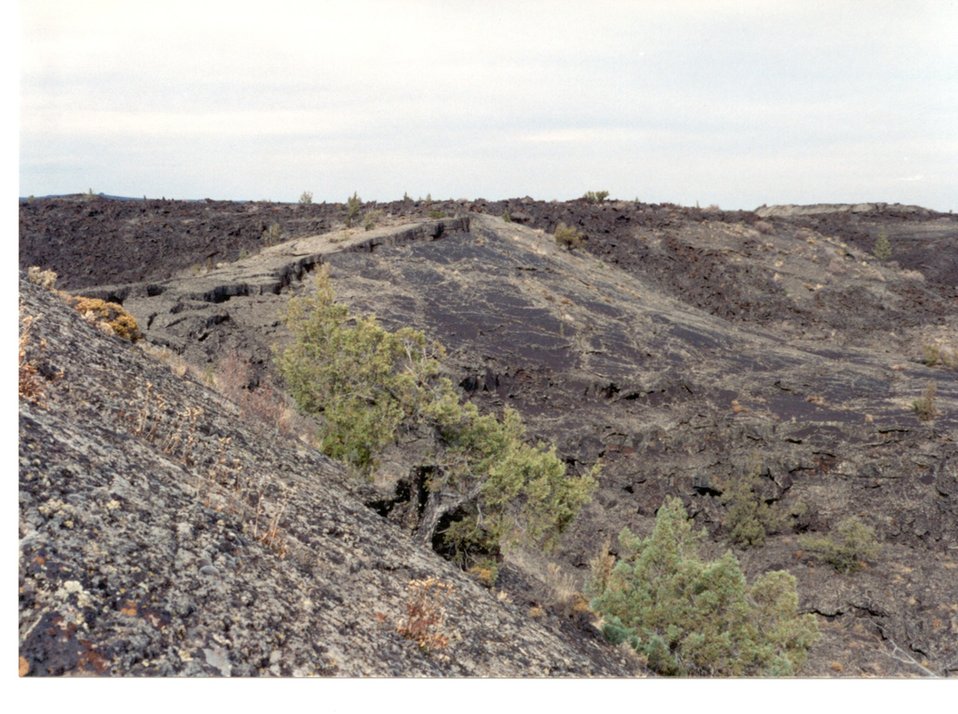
Pressure Ridge ad Wapi Flows Craters of the Moon Shoshone Field Office USRD Upper Snake River District